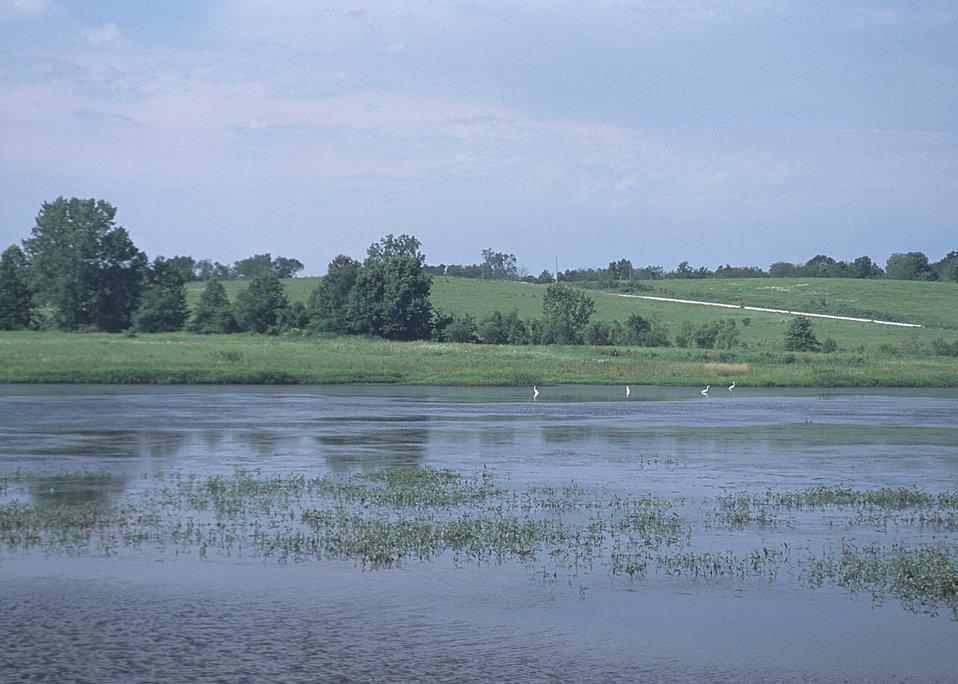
A restored wetland in Van Buren County, Iowa.